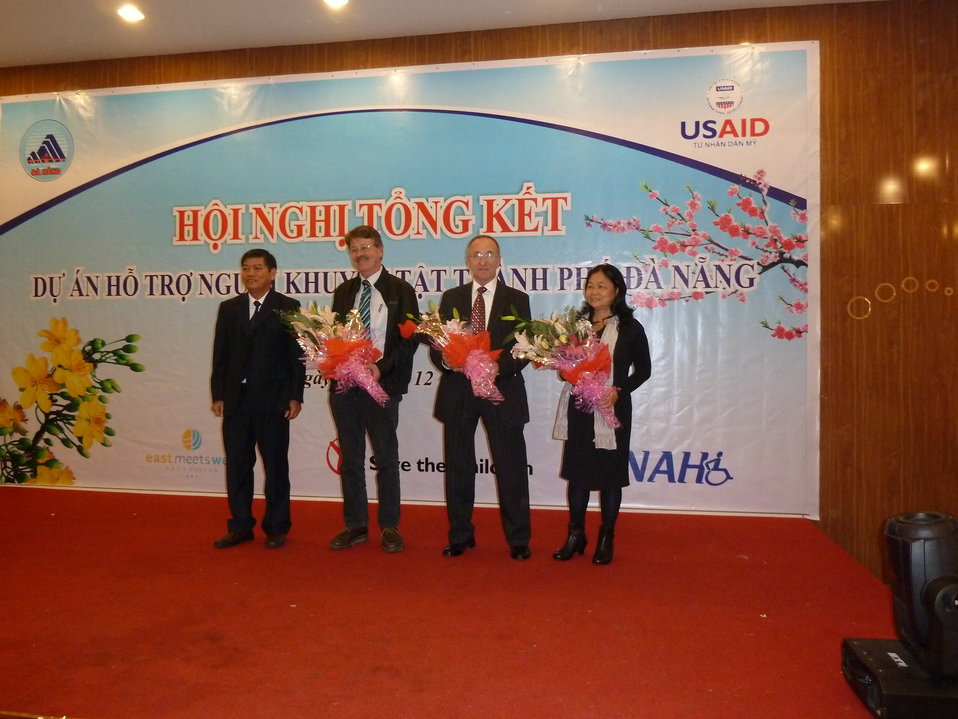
Danang Disability Workshop

Close out workshop of three-year USAID program in disabilities, Danang